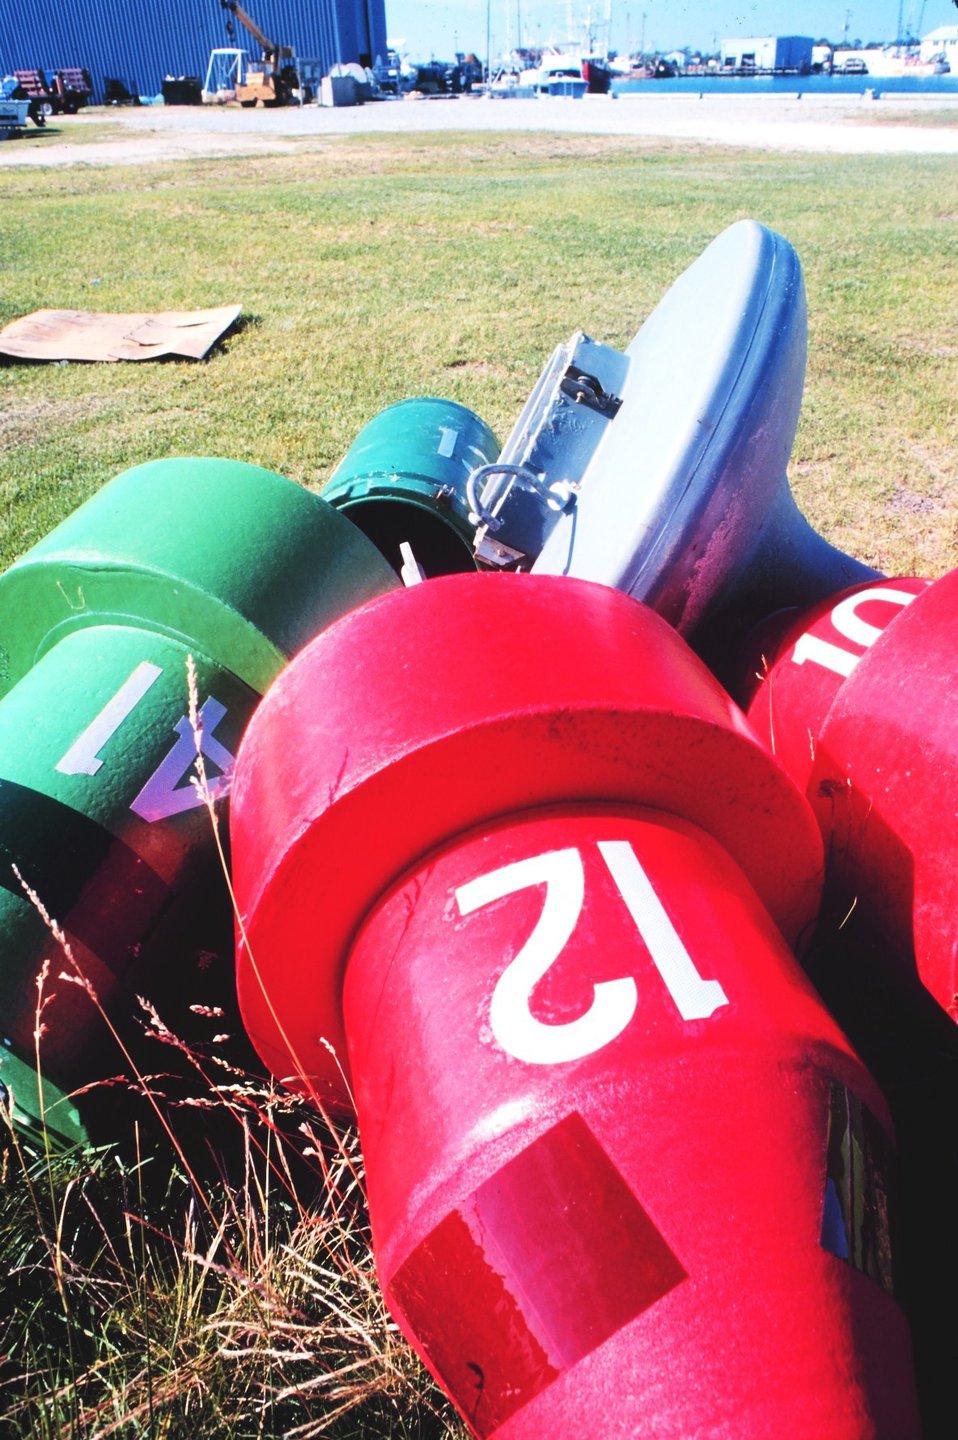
Buoys ready to guide mariners at the Coast Guard Station